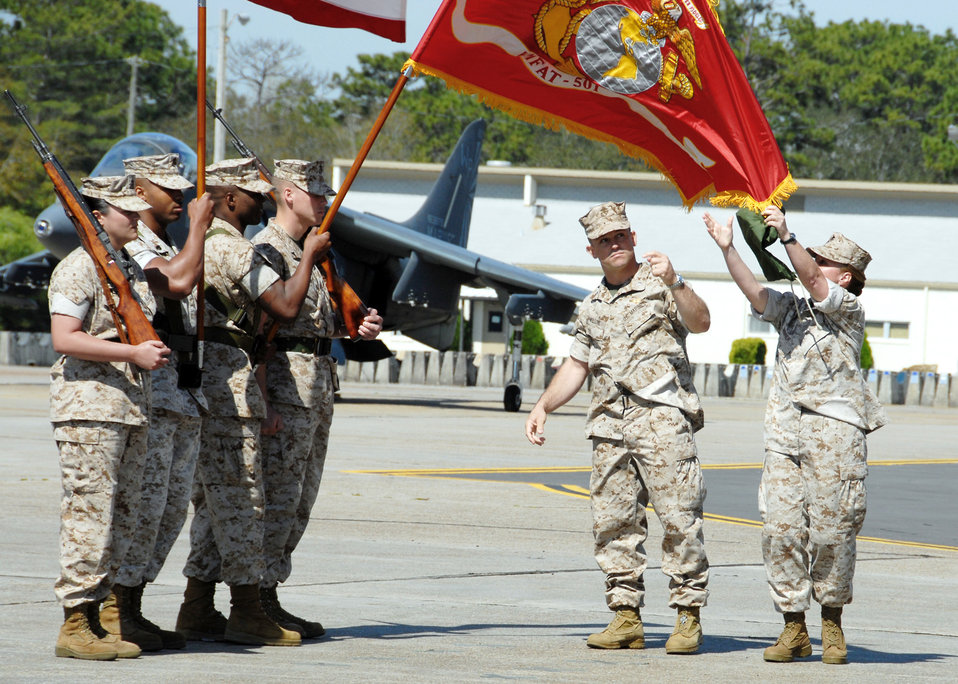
Marine squadron stands up at Eglin

Marine Lt. Col. James Wellons and Marine Sgt. Maj. Bonnie Skinner unfurl the new flag officially redesignating the squadron April 2 at Eglin Air Force Base, Fla. The Marine Fighter Attack Training Squadron 501 is the first Marine JSF squadron and also the first Marine squadron embedded into an Air Force wing. Colonel Wellons is the VMFAT-501 commander and Sergeant Skinner is the VMFAT-501 sergeant major.